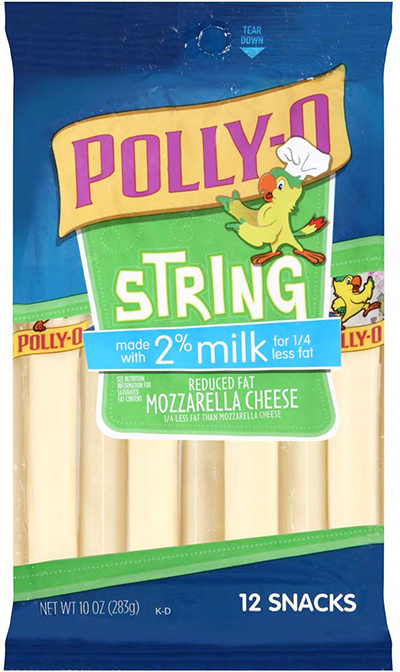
RECALLED – Cheese

October 25, 2013 – Product Recall – Kraft Voluntarily Recalls Some Varieties of Kraft And Polly-O String Cheese And String Cheese Twists Due to Premature Spoilage.